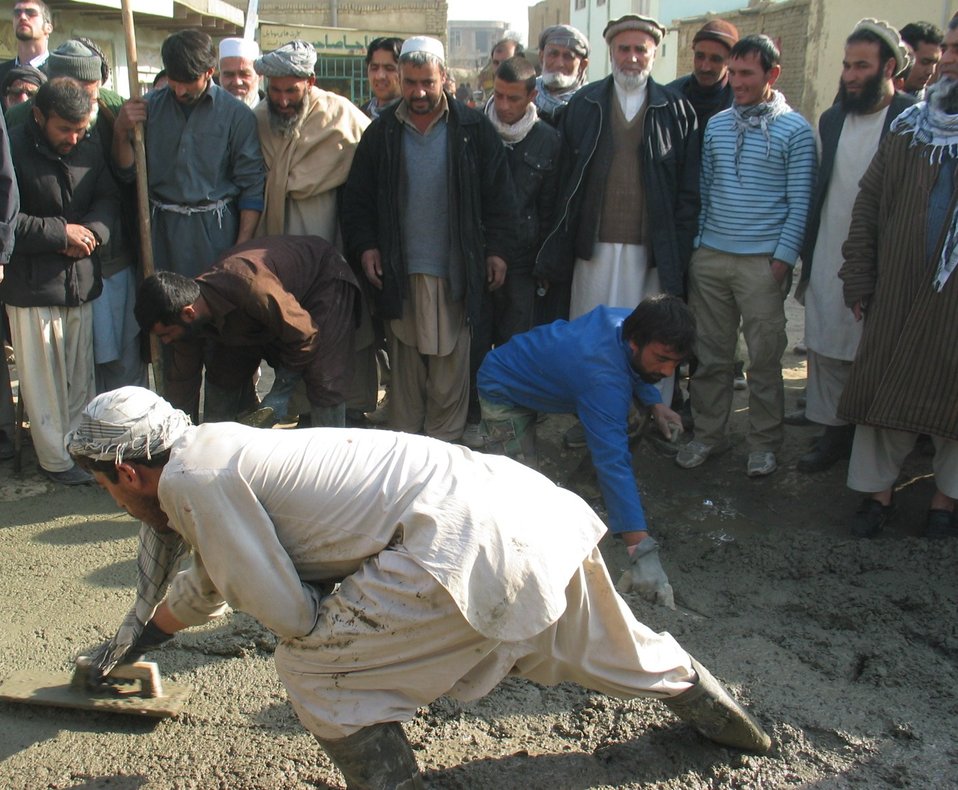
Kabul River Bridge Renovation, December 3, 2010